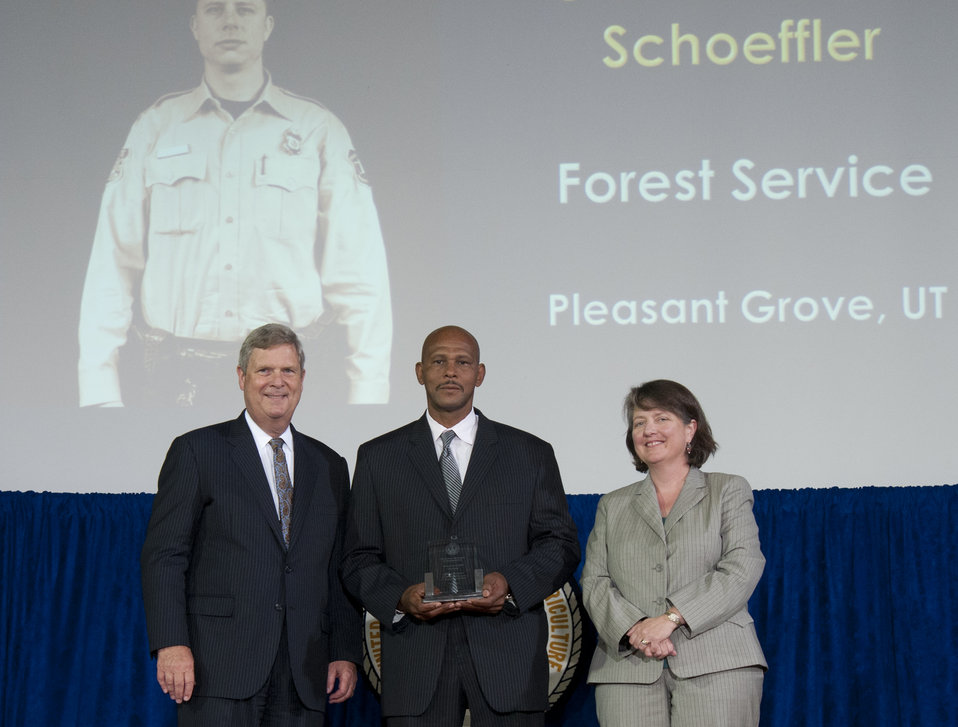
Agriculture Secretary Tom Vilsack and Agriculture Deputy Secretary Kathleen Merrigan present the Secretary’s Honor Award for Heroism and Emergency Response to U.S. Forest Service Officer James Schoeffler, accepting for Officer Schoeffler is a fellow officer David Farrow at the U.S. Department of Agriculture (USDA) 64th Annual Honor Awards Ceremony in Washington, D.C. on Wednesday, Sept. 12, 2012. Officer Schoeffler received his award for the outstanding skills and heroic actions that eliminated a substantial danger for severe injury or death to the public visiting our National Forest lands.